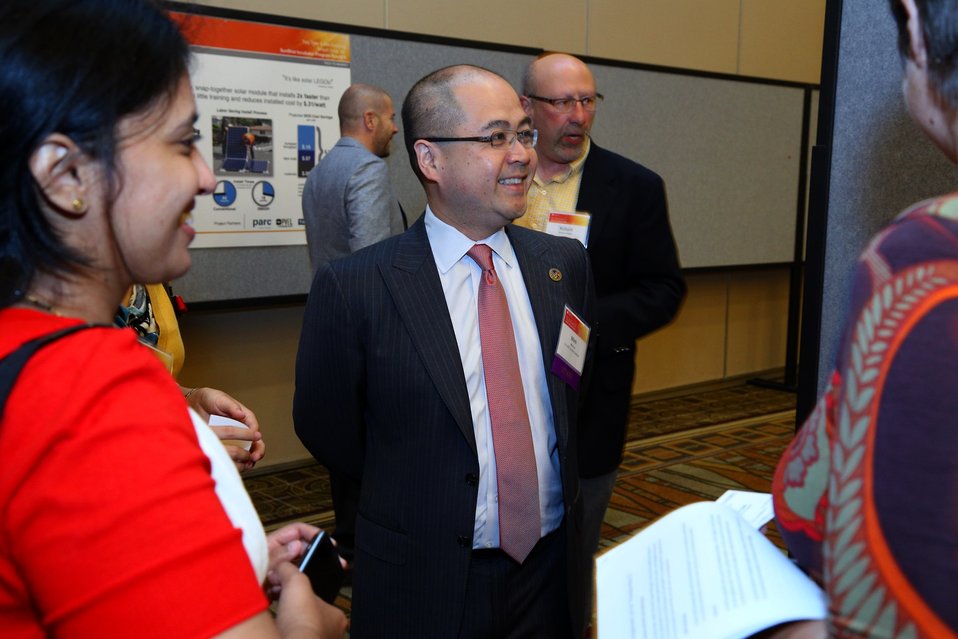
Tech Forum 17

SunShot Director Minh Le connects with attendees and awardees at the Tech Forum.